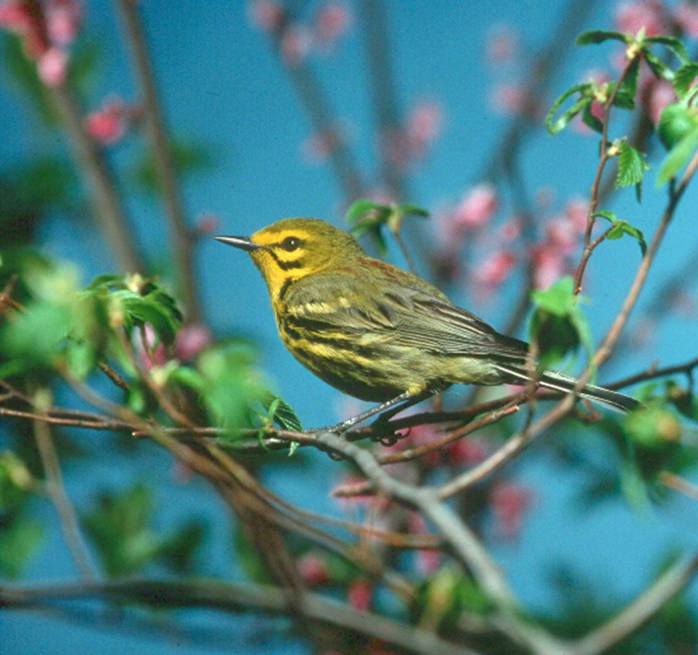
prairie warbler